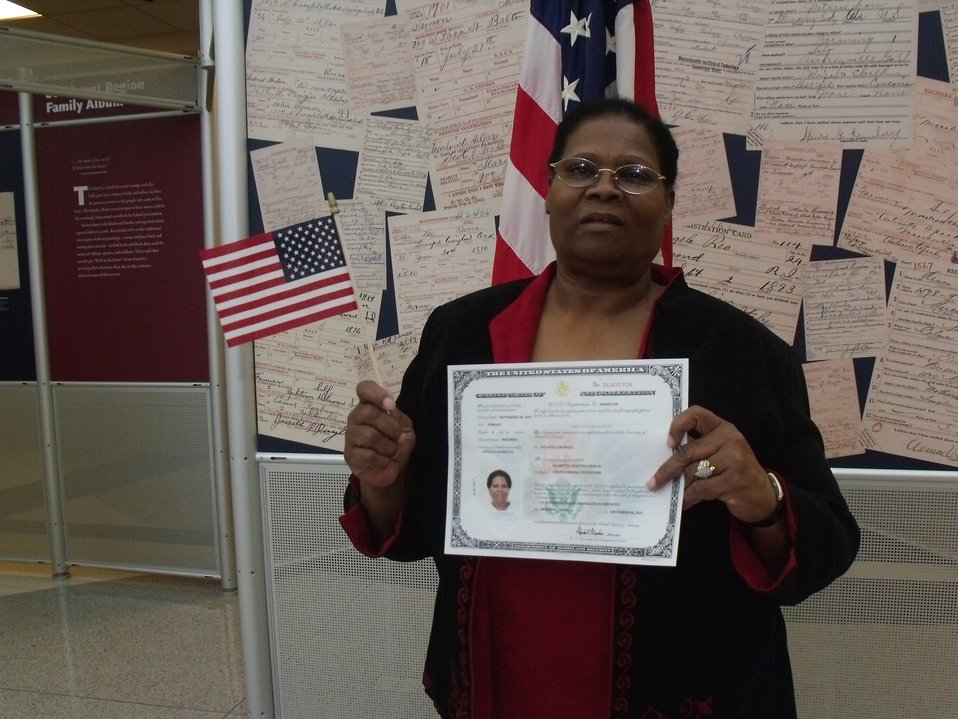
New Citizens